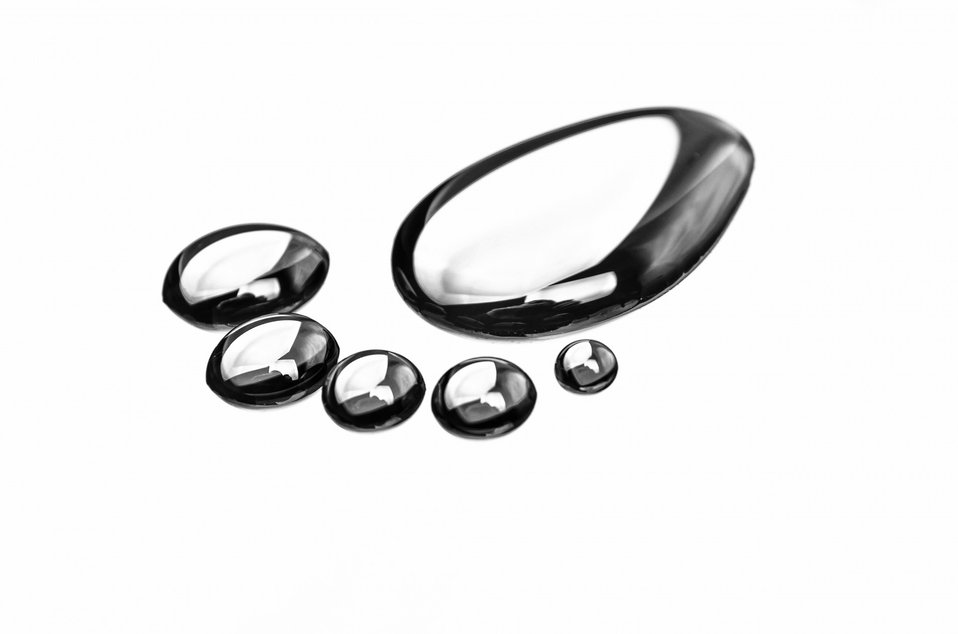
Footprint

The footprint made up of water on a white background.